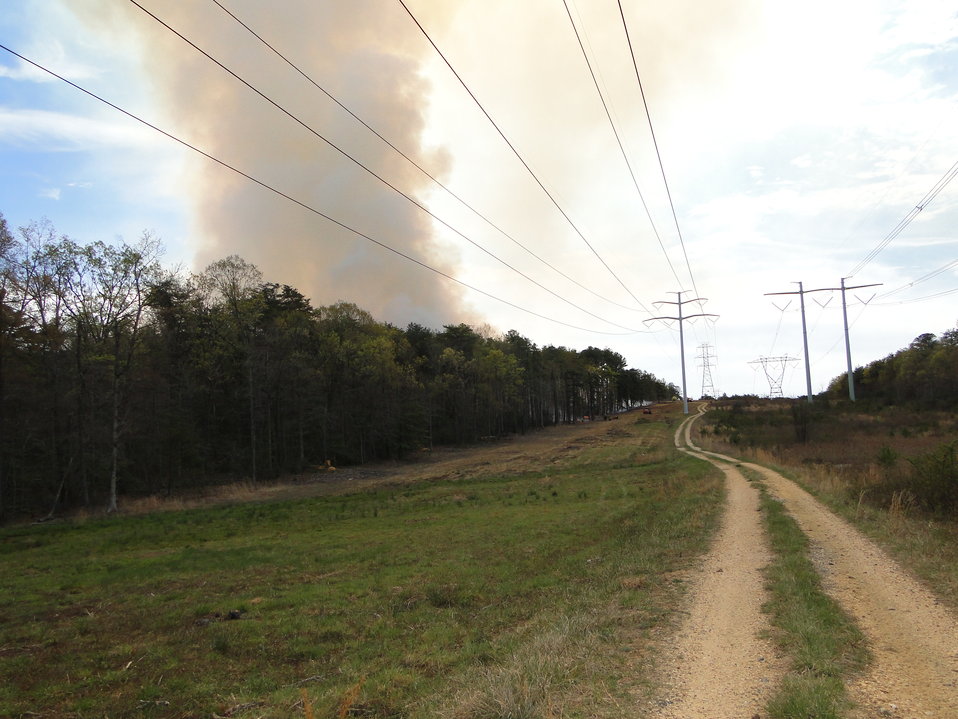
Smoke Plume away from Powerline

Laurel, Maryland, April 5, 2012: A plume of smoke from a controlled burn rises away from a powerline right-of-way nearby. This burn was done at Patuxent Research Refuge's Savannah Restoration Unit to increase refuge species and habitat diversity. Specifically, the refuge hoped to increase density and diversity of rare darkling beetles and forest floor plants.